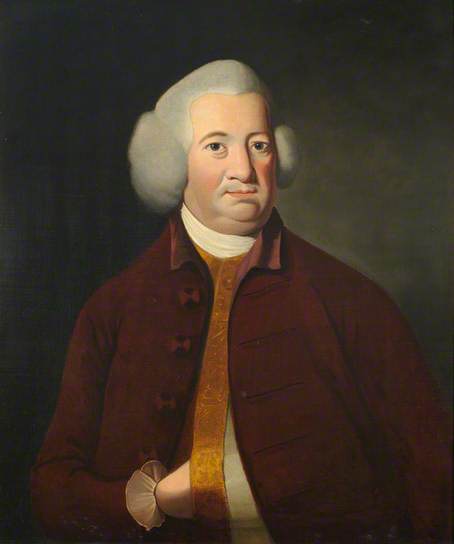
Thomas Fanshawe 5th of Parsloes Manor